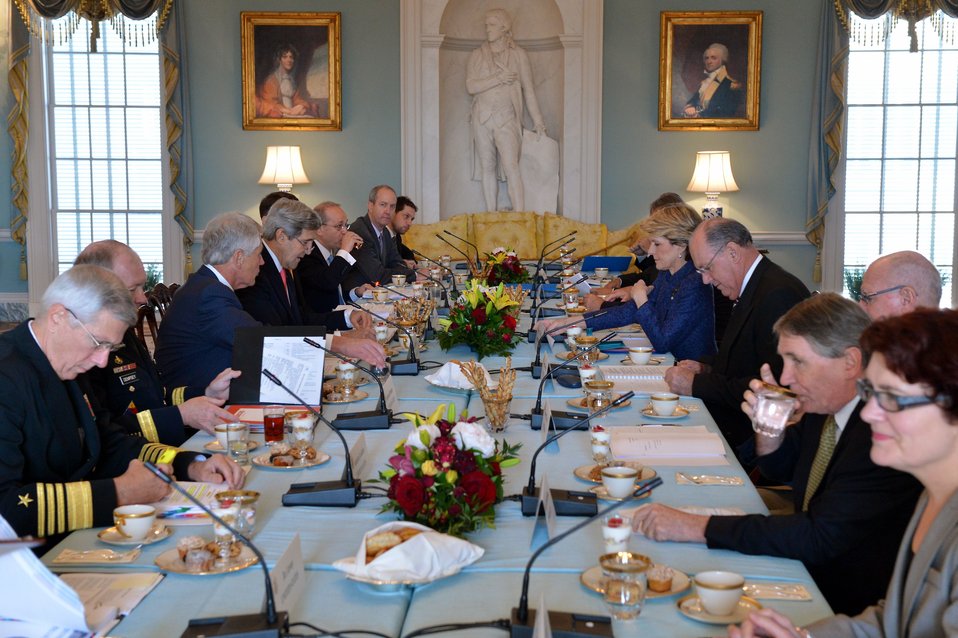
Secretaries Kerry, Hagel and Australian Ministers Bishop, Johnston Participate in the AUSMIN Session I

U.S. Secretary of State John Kerry, U.S. Secretary of Defense Chuck Hagel, Australian Foreign Minister Julie Bishop, and Australian Defence Minister David Johnston participate in the AUSMIN Session I at the U.S. Department of State in Washington, D.C., on November 20, 2013.